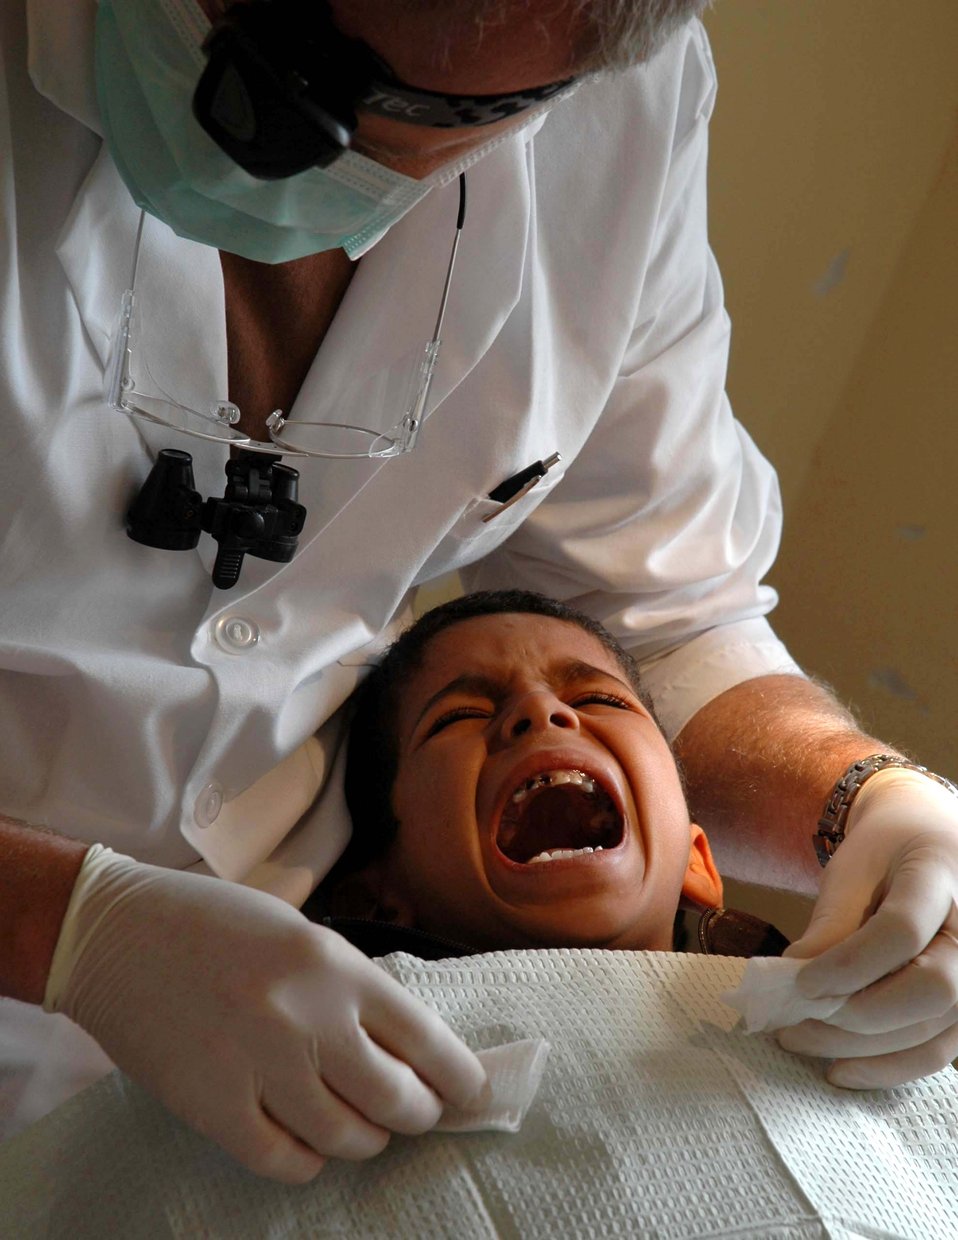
Airmen provide humanitarian aid for African Lion

A small boy relunctantly opens his mouth for Maj. Brent Dupper as the major prepares to work on the boy's teeth during humanitarian assistance Exercise African Lion April 23 in Morocco. Major Dupper joined a team of 944th Medical Squadron members from Luke Air Force Base, Ariz., to participate in humanitarian assistance at six sites in Morocco. Major Dupper is a dentist with the 452nd Aerospace Medicine Squadron at March Air Reserve Base, Calif.